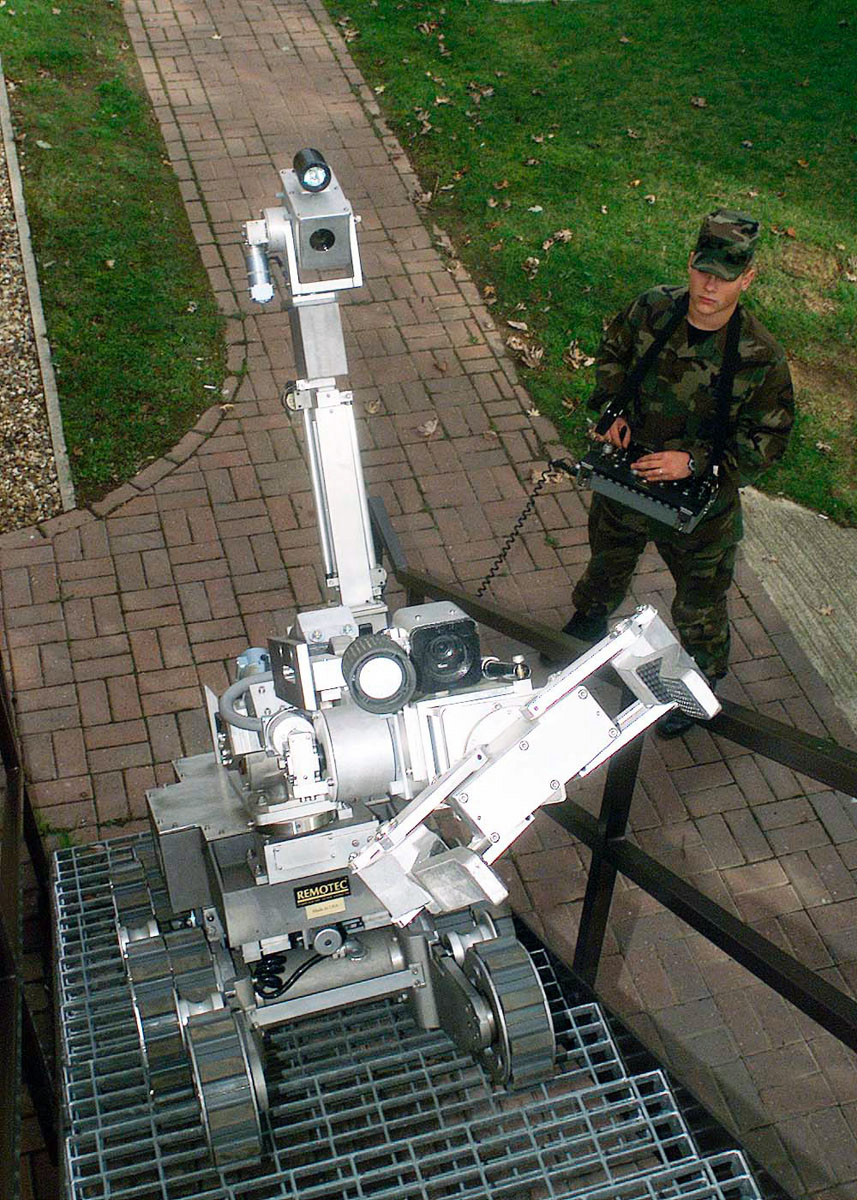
MK-III RONS

ROYAL AIR FORCE LAKENHEATH, England -- Airman 1st Class Ronnie Brickey, an Explosive Ordnance Disposal apprentice with the 48th Civil Engineer Squadron, operates the MK III RONS Robotics system. The MK III RONS Robotics system is an all-terrain, tracked vehicle with manipulator arm and TV cameras, that is deployed for remote investigation, handling, and disposal of explosive materials.